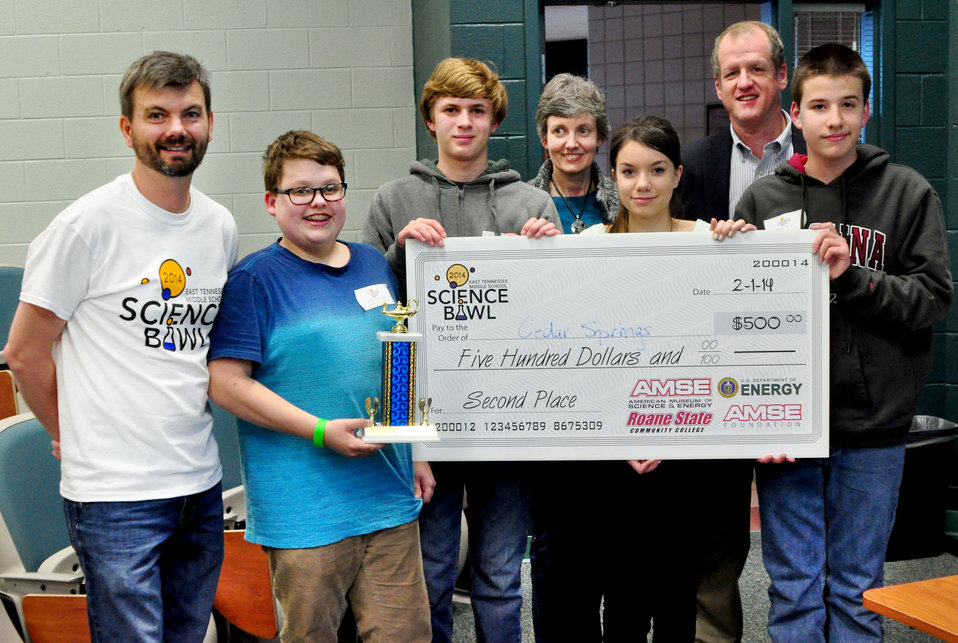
Cedar Springs Home School Association Second Place DOE Middle School Science Bowl

14-017 DOE photo Lynn Freeny 2-1-2014 Oak Ridge Tennessee